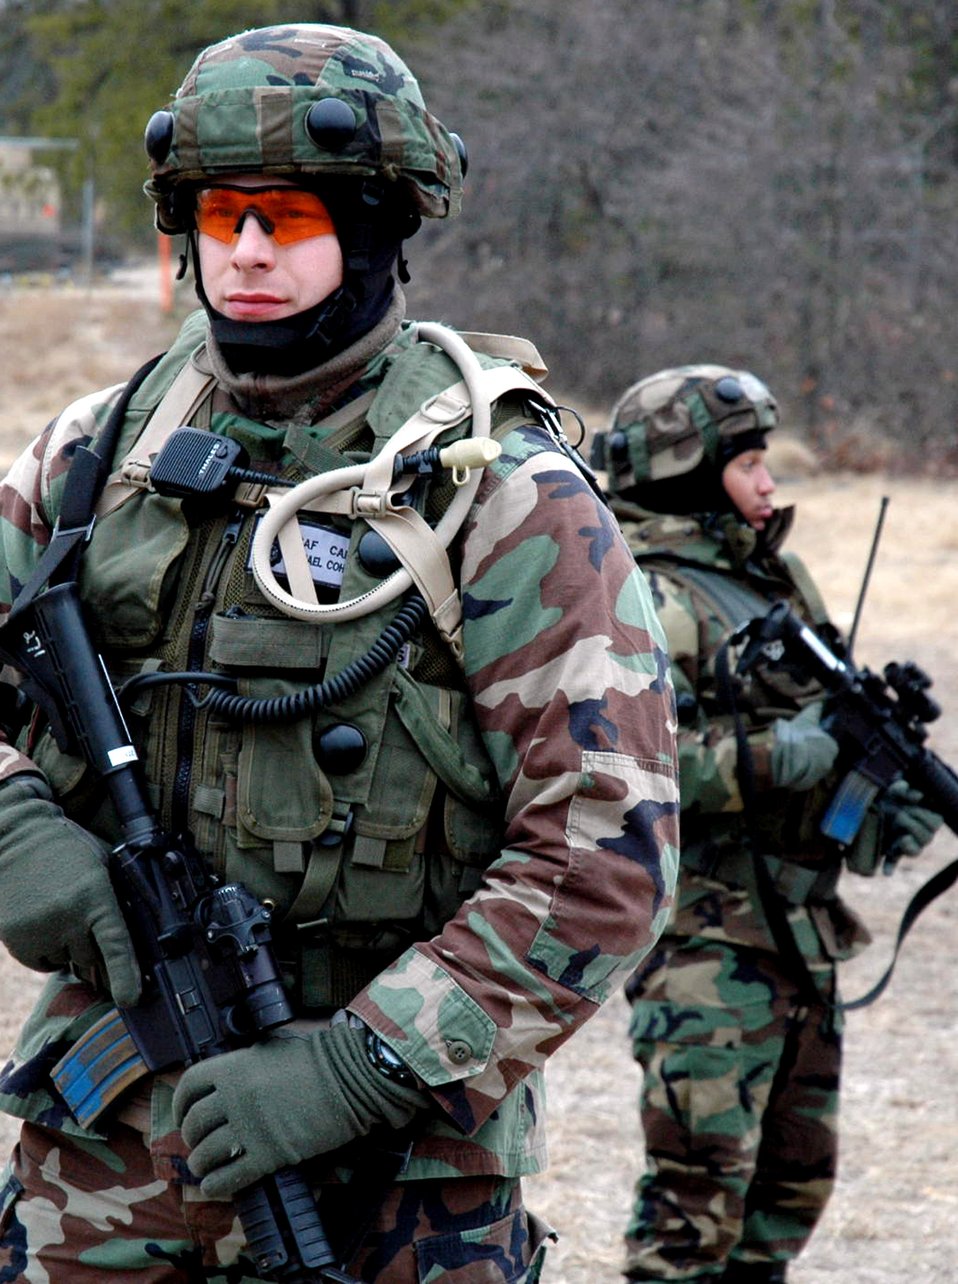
Warrior school

Capt. Michael Cohen and Airman 1st Class Jackson Calvin watch over a checkpoint during operations for Exercise Eagle Flag 08-2 Jan. 19 at Naval Air Engineering Station Lakehurst, N.J. The exercise is operated by members of the Air Force Expeditionary Center's Expeditionary Operations School and 421st Combat Training Squadron at Fort Dix, N.J. Captain Cohen and Airman Calvin are assigned to the 570th Contingency Response Group from Travis Air Force Base, Calif.